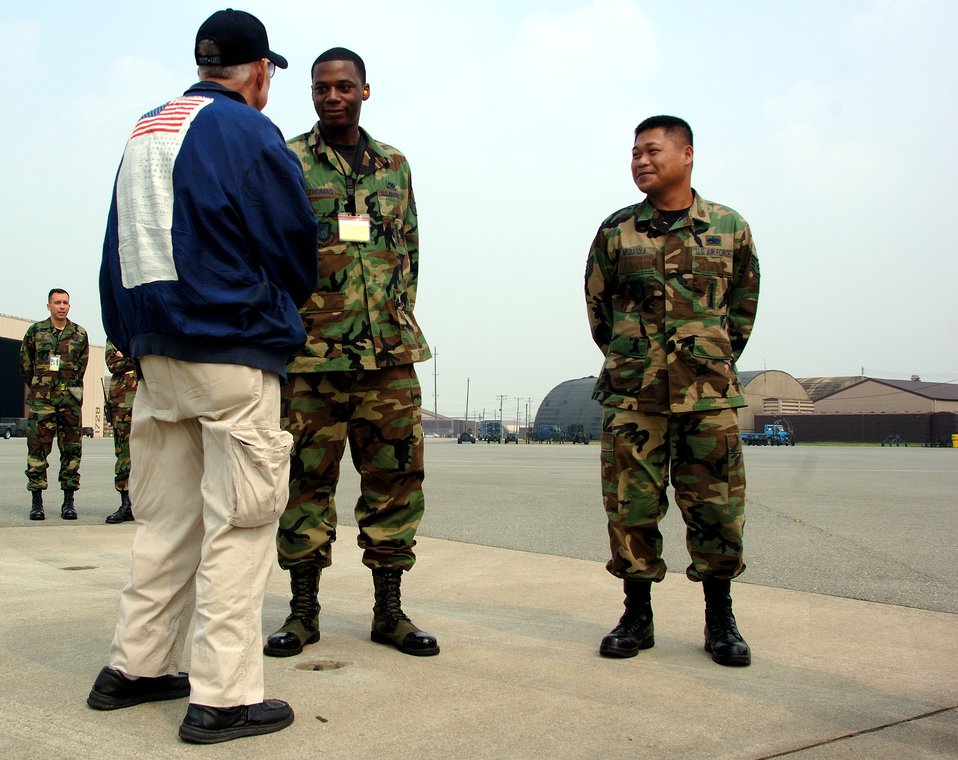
Pilots of yesteryear interact with Airmen of today

Senior Airman Gerald Thomas and Staff Sgt. John Arquitala meet retired Lt. Col. Harold Fischer during a Sept. 11 tour of Osan Air Base, South Korea. Colonel Fischer is a Korean War double ace. Korean War veterans are visiting South Korea bases during a weeklong tour in observance of the Air Force's 60th Anniversary.